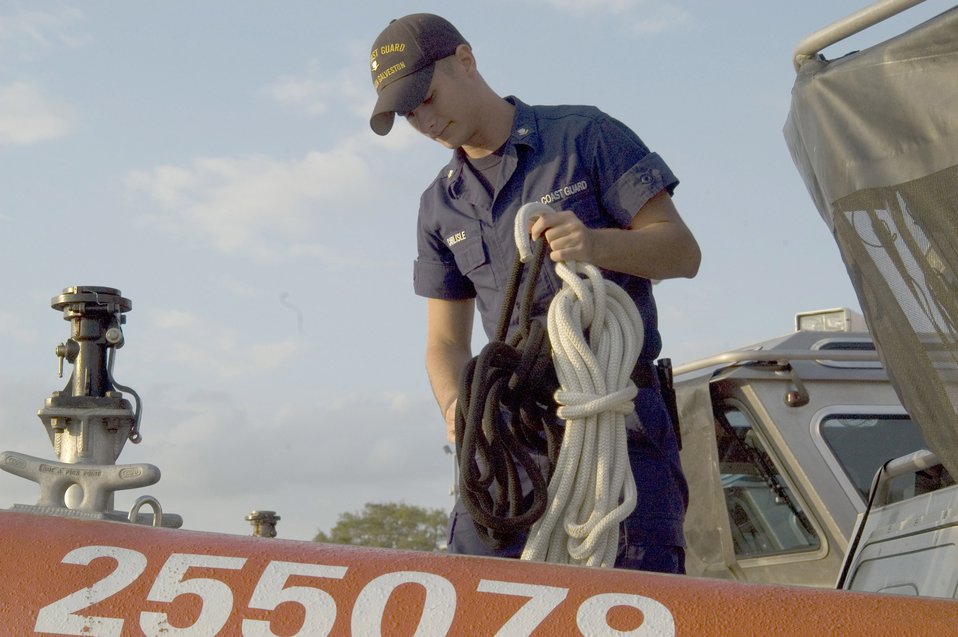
Coast Guard Incident Command Center prepares for Ike

Coast Guard Petty Officer 3rd Class Ryan Carlisle prepares one of the 25-foot response boats Sept. 11 at the Leonard E. Merrell Center in Katy, Texas. Petty Officer Carlise and members of the Coast Guard Sector Houston-Galveston are preparing for the arrival of Hurricane Ike expected to hit the Gulf Coast Sept. 13.